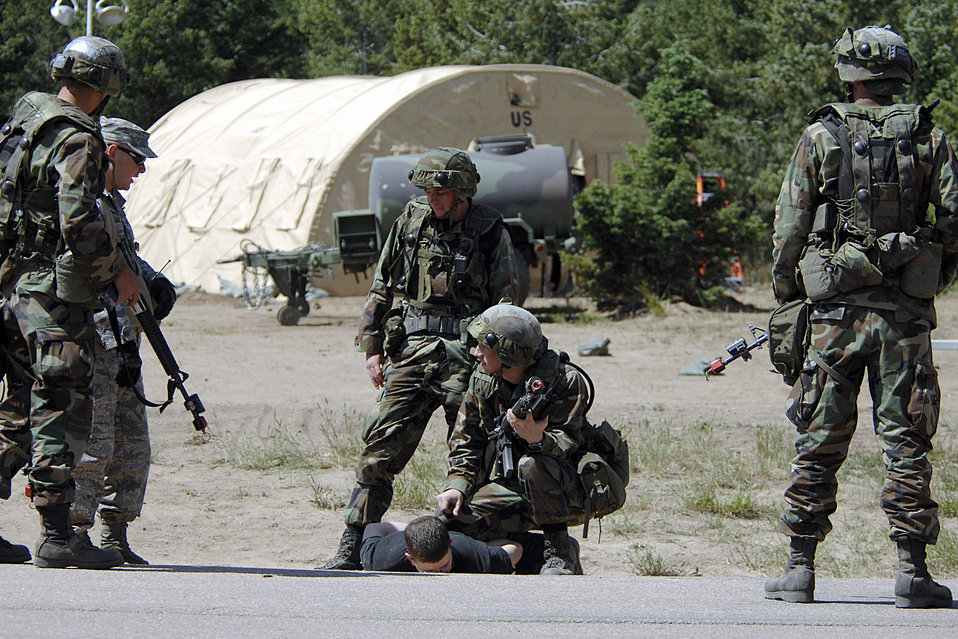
Global Engagement readies Academy cadets for future

U.S. Air Force Academy cadets practice apprehension techiniques near the Military Operations Urban Terrain village during the 71-day summer training schedule June 18 at the Academy in Colorado. Approximately 1,200 Academy cadets are going through intensive training this summer to be ready to be globally engaged when they graduate.